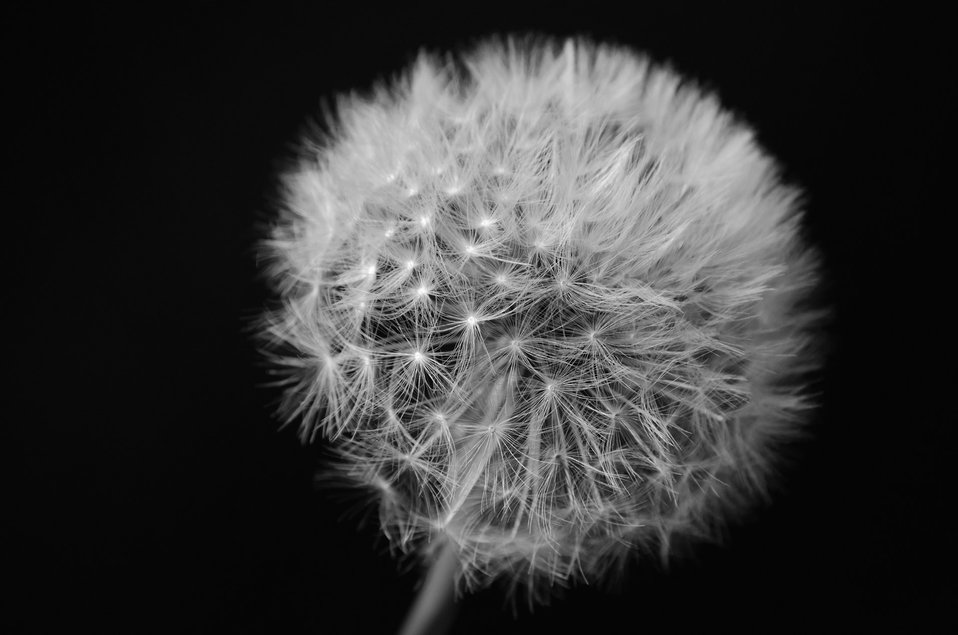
Dandelion on black background.